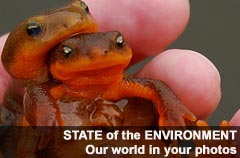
Spread the word!

If you see a great picture that you think should be in State of the Environment, copy this code and paste it into the photographer's comment box for that photo:

Great photo! Consider adding it to: Official EPA and NARA Group Thank you for sharing your photos!